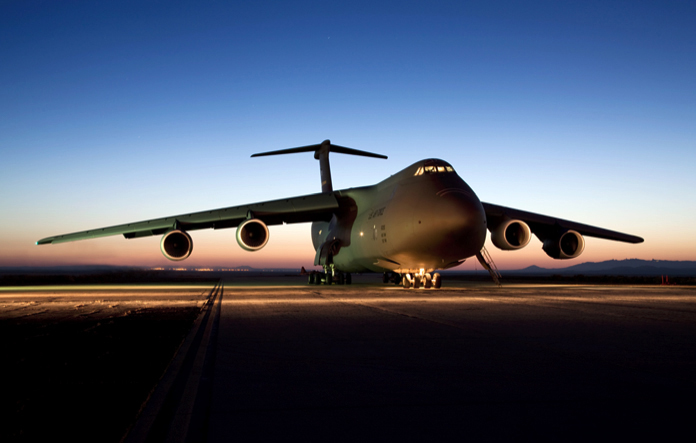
Newest Galaxy

A C-5M sits on the flightline at Dover Air Force Base, Del. The Super Galaxy boasts upgraded engines and avionics, enhanced communications, navigation and safety systems, and improved reliability rates.